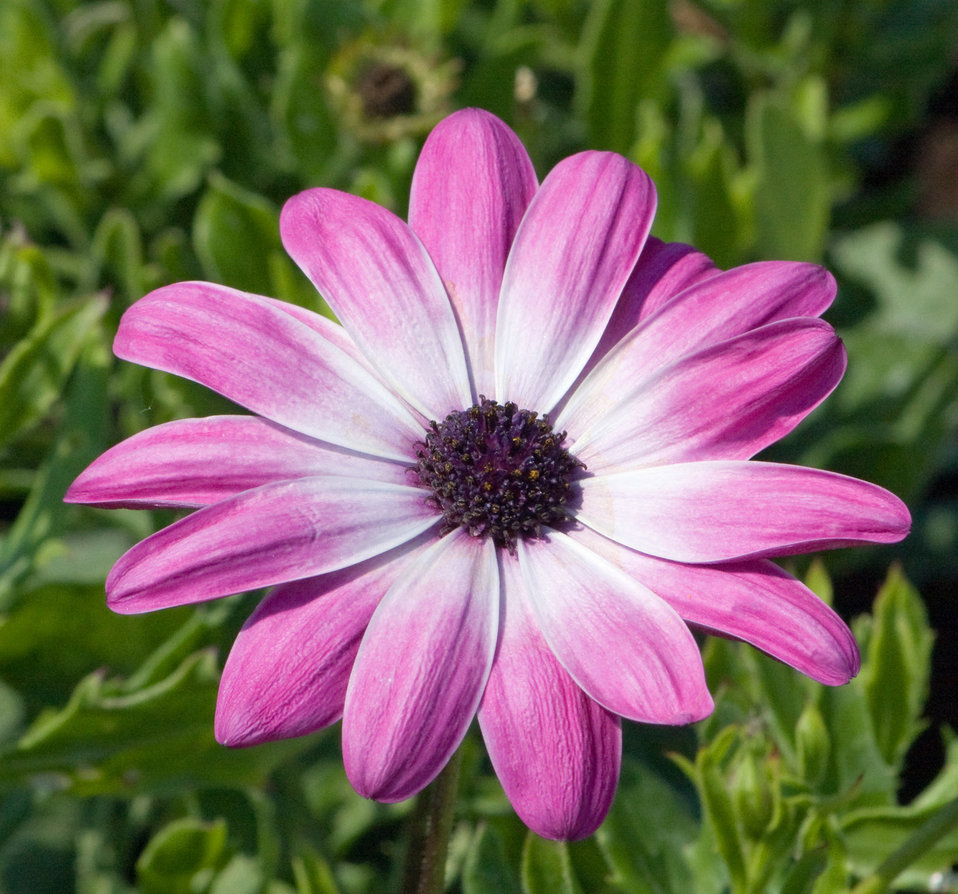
Pink flower

Beautiful pink daisy flower close-up.